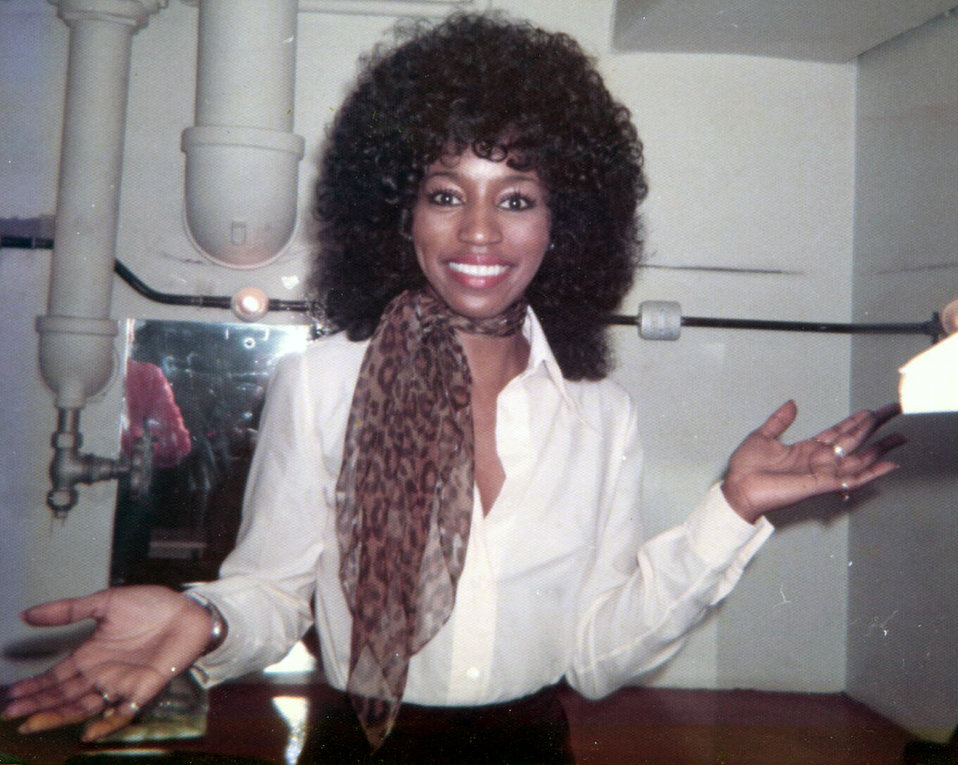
Fayette Pinkney, New Victoria Theatre, London, UK 1974.